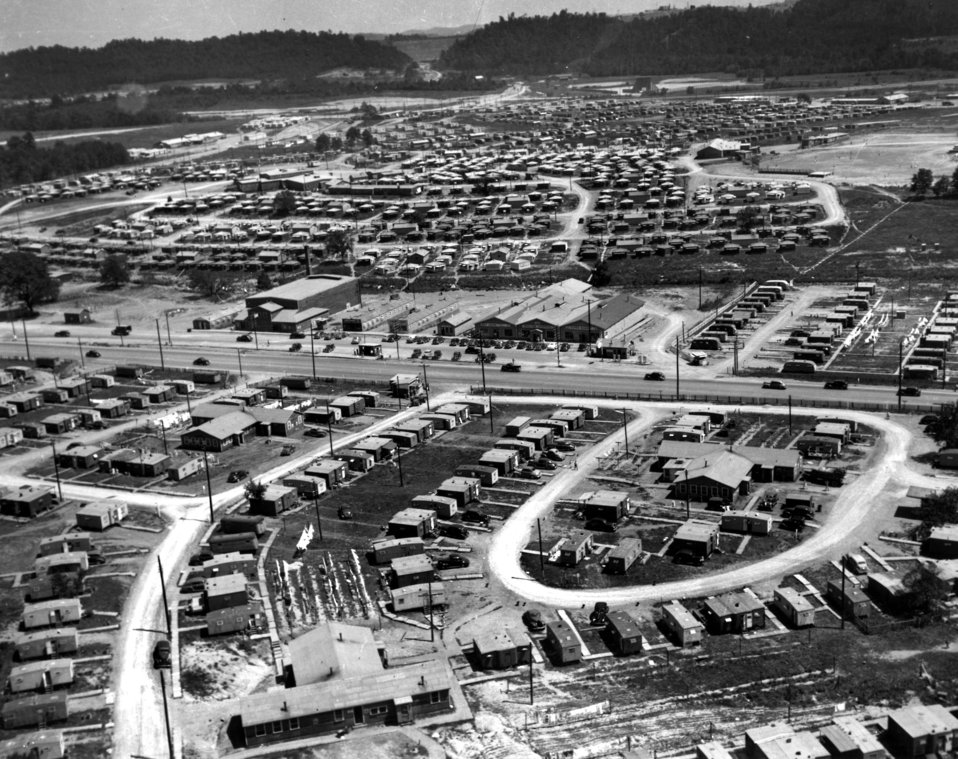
Trailer and Hutment Area – Looking Over High School Site. S.E. Toward Kerr Hollow Oak Ridge

1286 DOE photo by Ed Westcott Oak Ridge Tennessee 1945